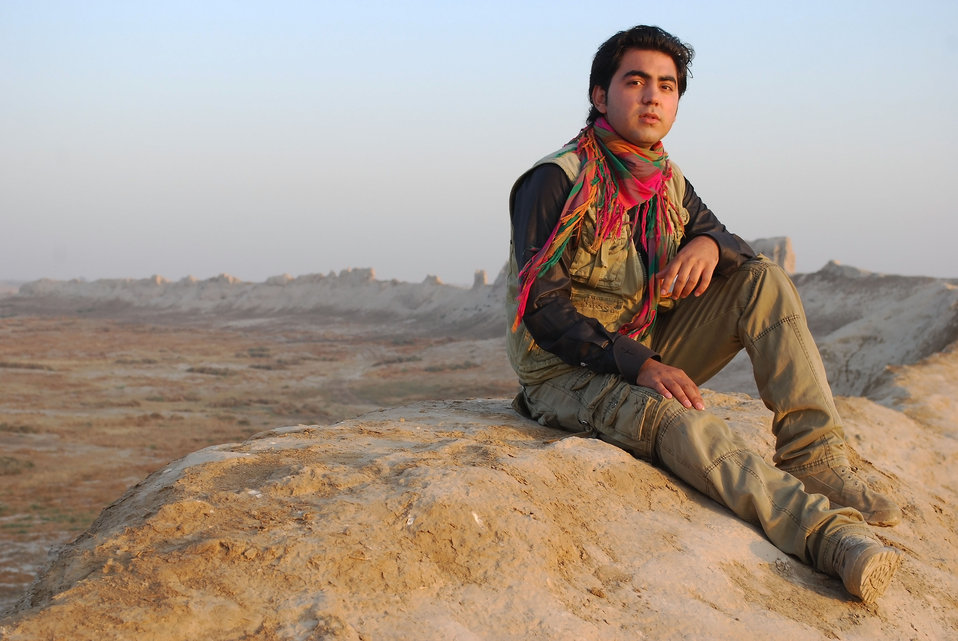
'On the Road' in Balkh Province